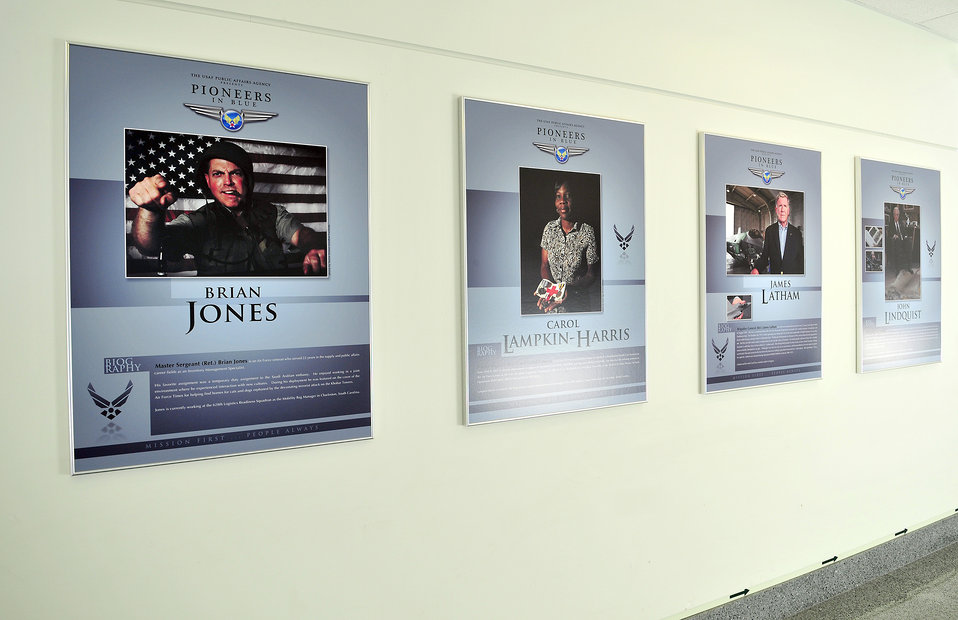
Pioneers in Blue